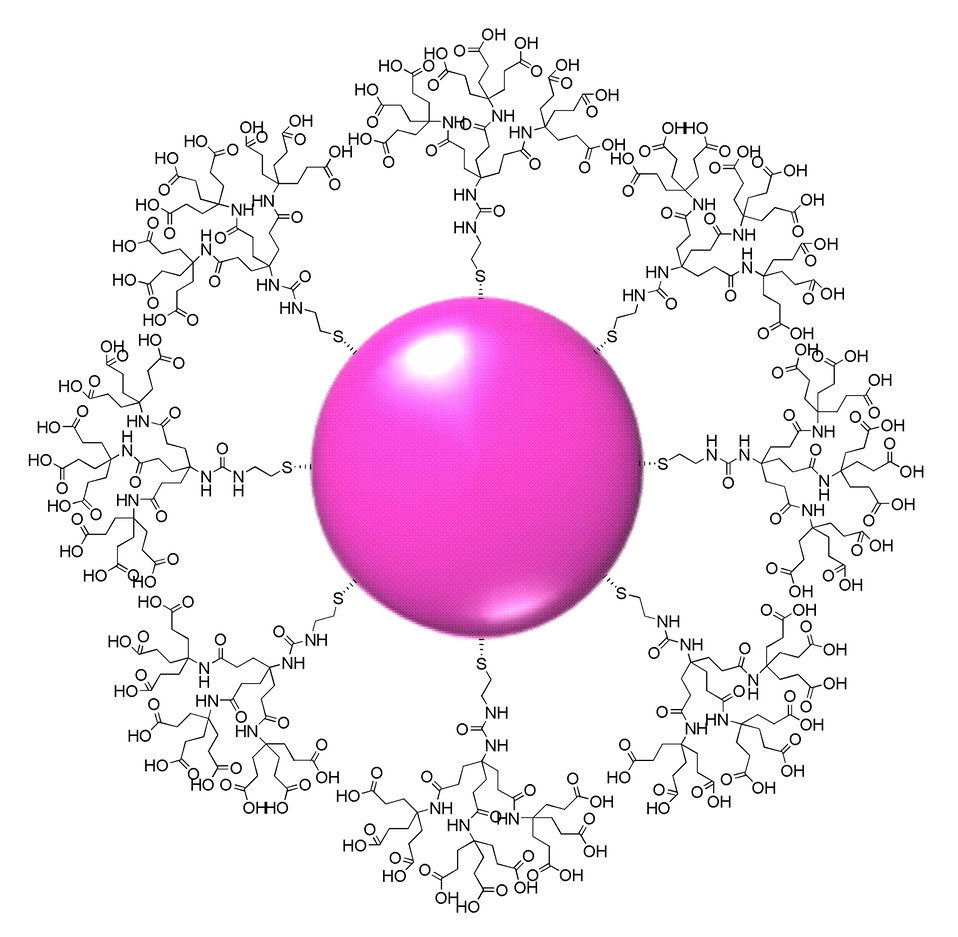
Nanoparticle; Gold

Sketch of a typical gold nanoparticle encased in dendrons. A single sulfur atom at the 'root' of each multiply branched dendron anchors it to the gold nanoparticle at the center. NIST and NCI/NCL researchers are studying the tiny constructs as a test bed and basic vehicle for many possible biomedical applications.